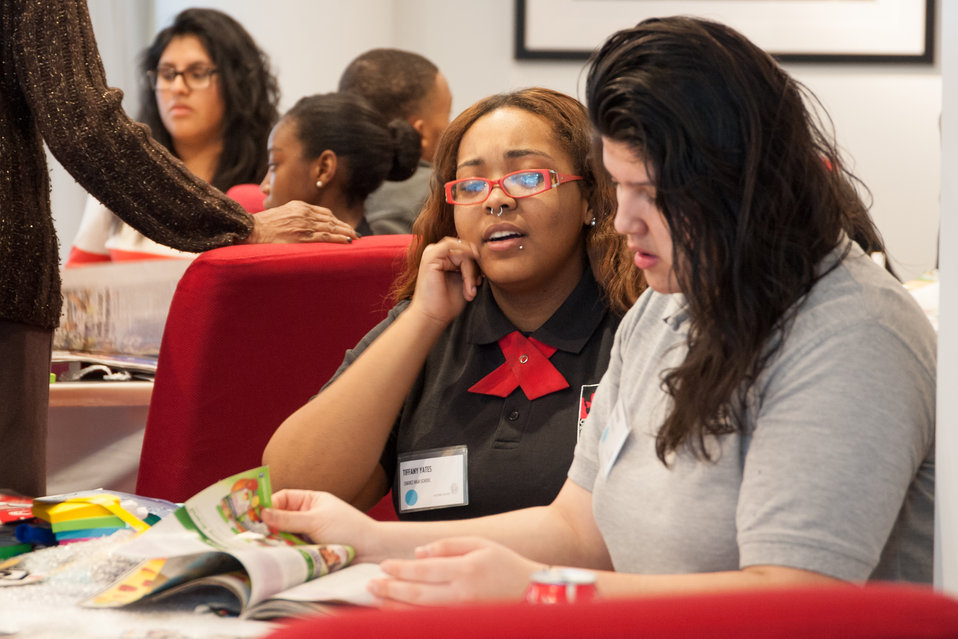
Mentor NDFW Event 2014